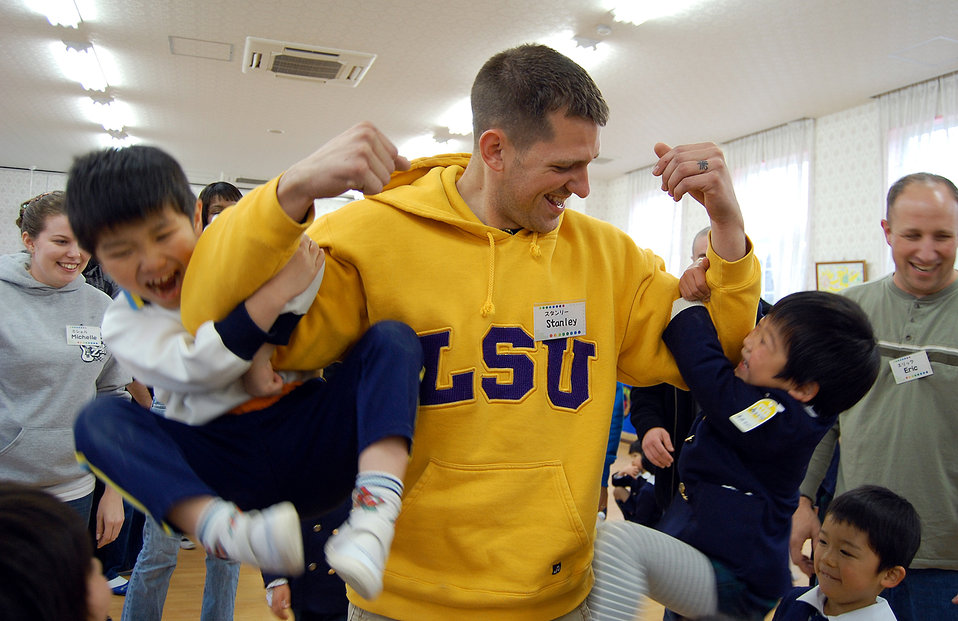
Kadena Airmen visit school children during training

Staff Sgt. Stanley Weaver hoists up school kids from Runbini Kindergarten Feb. 1, 2010, near Hyakuri Air Base, Japan. A dozen Airmen assigned to Kadena Air Base, Japan, visited the school during their aviation training relocation at the Hyakuri AB, about 70 miles north of Tokyo. Sergeant Weaver is assigned to the 67th Aircraft Maintenance Unit.